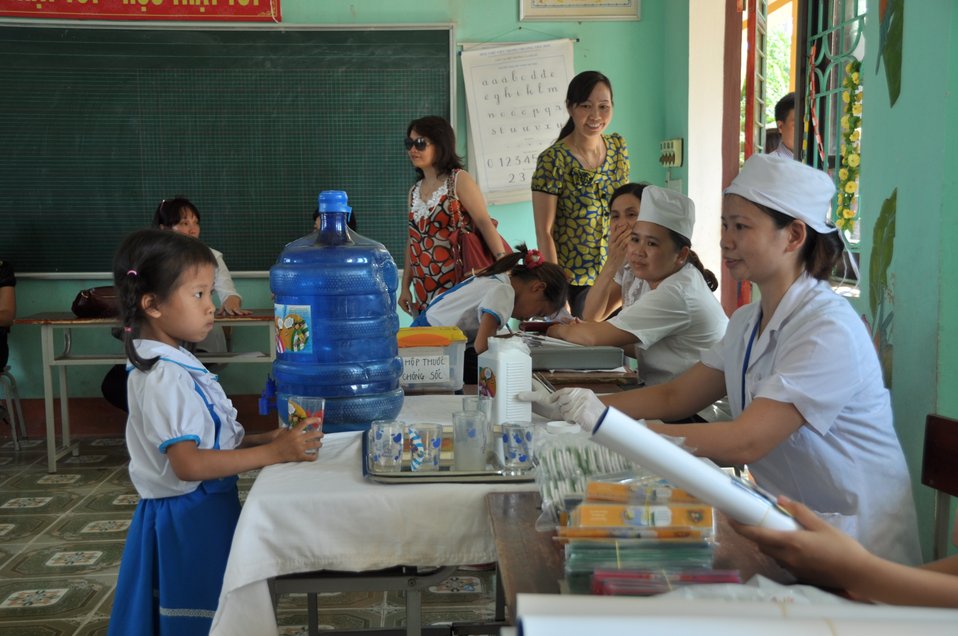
USAID supports deworming education and medication distribution in Bac Giang Province

May 20, 2013